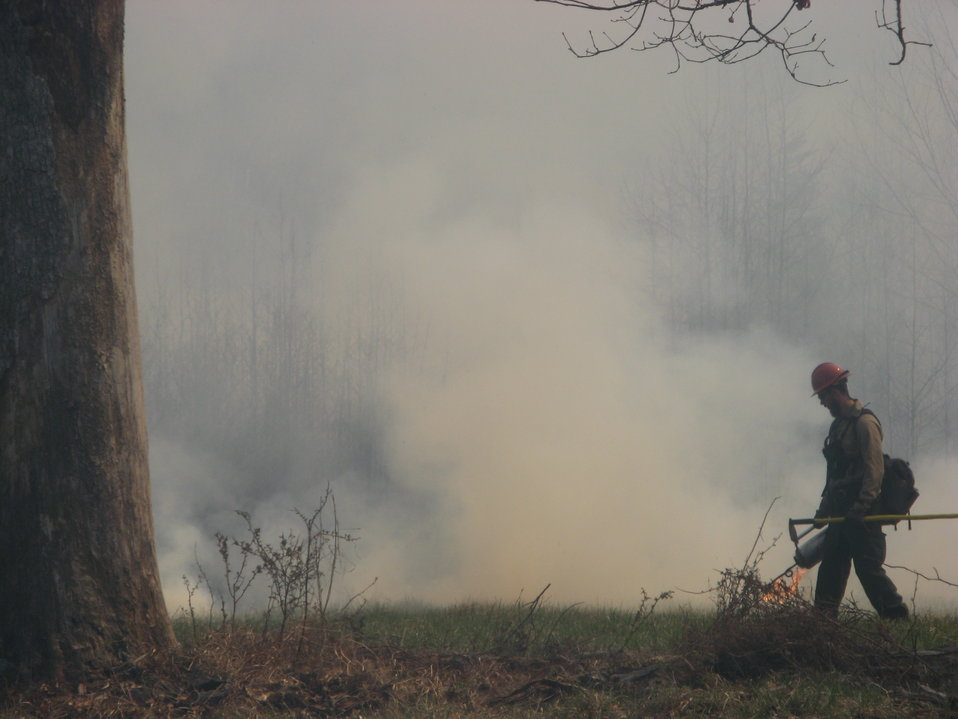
Igniting grassland burn with drip torch

Laurel, MD: A firefighter from the National Park Service lights a controlled burn with a drip torch at Patuxent National Research Refuge. The U.S. Fish and Wildlife Serrvice relys on partner agencies to help do burns and achieve conservation goals.